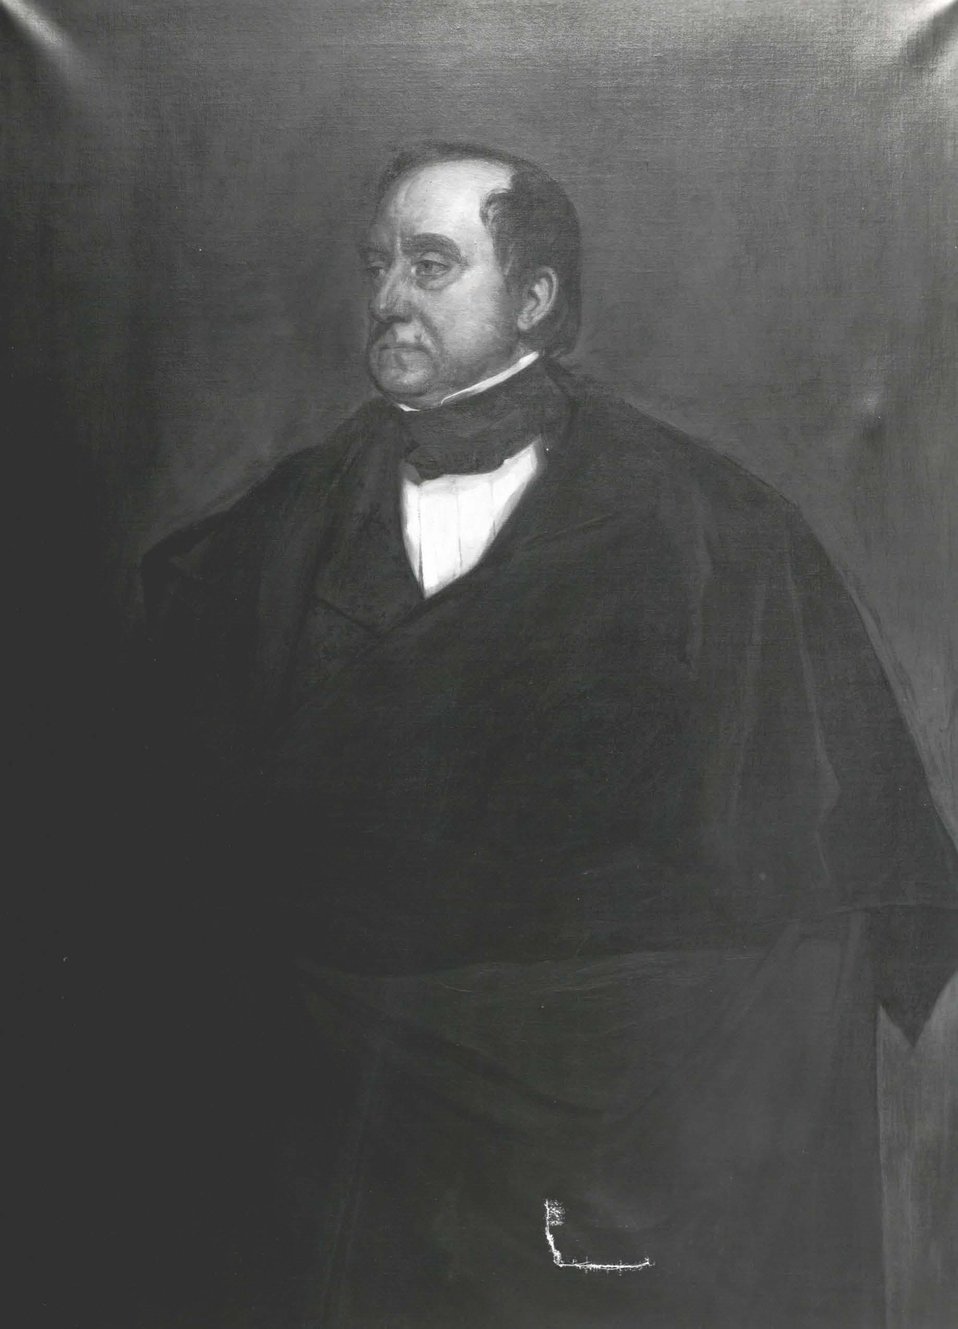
Lewis Cass, U.S. Secretary of State, March 6, 1857 to December 14, 1860